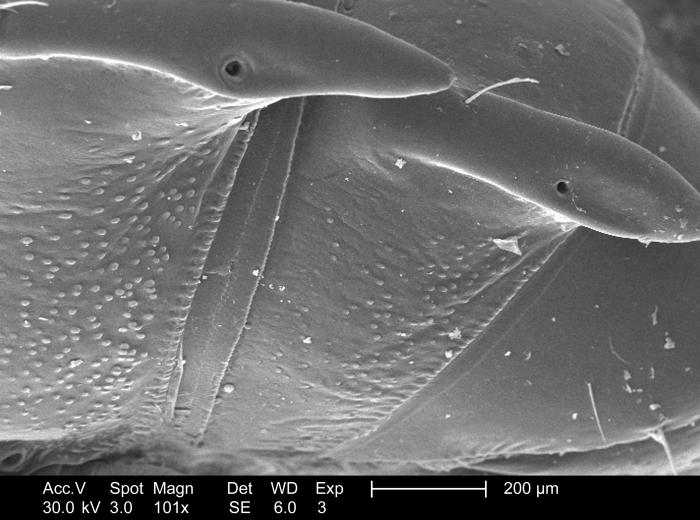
Magnified 101x, this scanning electron micrograph revealed some of the morphologic details adorning the surface of the chitinous exoskeletal cuticle covering an unidentified millipede found deceased on the ground in the Decatur, Georgia suburbs.